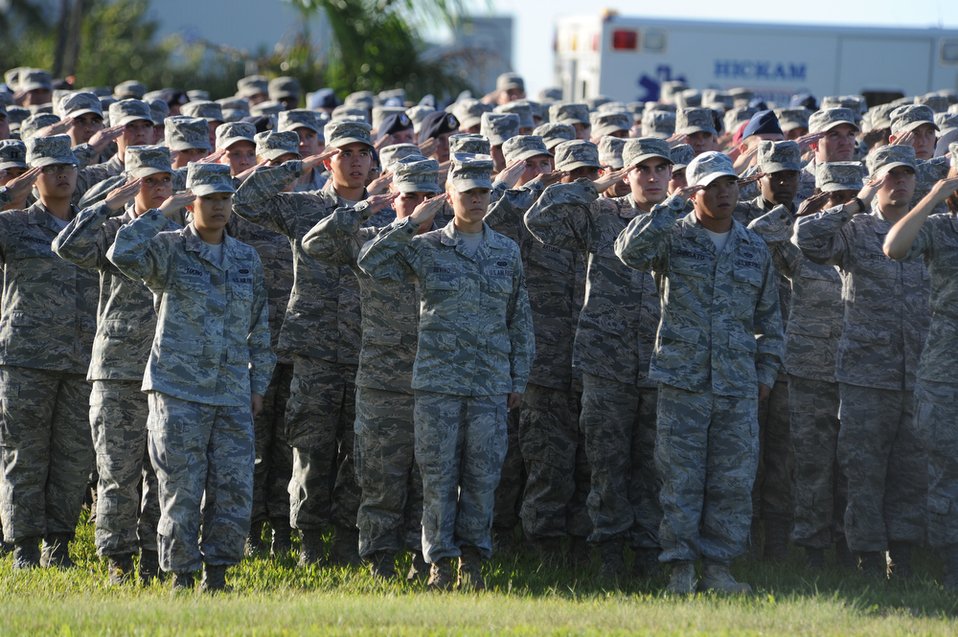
9/11 ceremony at Joint Base Pearl Harbor-Hickam, Hawaii

Active-duty, Guard and Reserve Airmen salute during the playing of the National Anthem while participating in a 9/11 tribute ceremony Sept. 9, 2011, at Joint Base Pearl Harbor-Hickam, Hawaii. The formation consisted of three columns to honor the three cities where planes crashed.